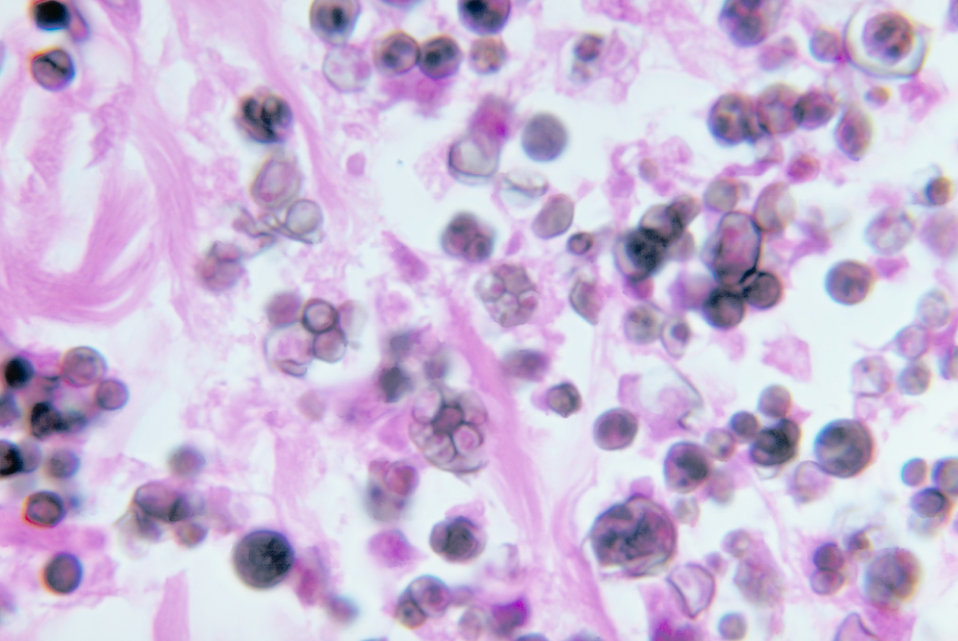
Note the histopathologic changes in protothecosis of the skin and mucous membrane of the nose due to P. wickerhamii.